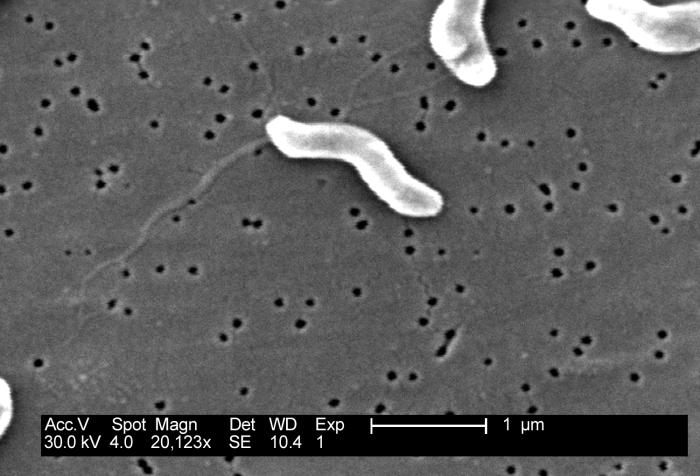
This scanning electron micrograph depicts a number of Gram-negative Campylobacter jejuni bacteria, magnified 20,123x.